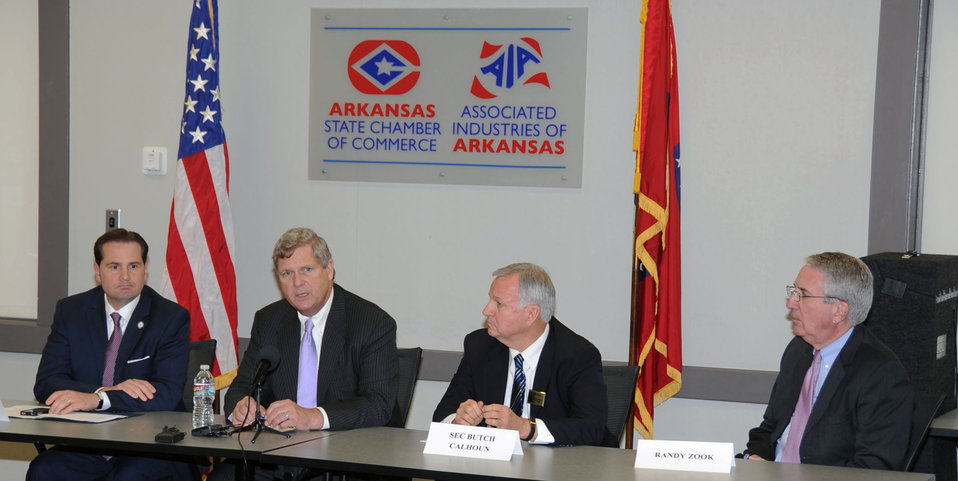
Agriculture Secretary Tom Vilsack speaking at a press conference following an agriculture producers roundtable held at the Arkansas State Chamber of Commerce. Left to right; Chris Masingill, Federal Co-Chairman of the Delta Regional Authority, Agriculture Secretary Tom Vilsack, Arkansas Secretary of Agriculture Butch Calhoun and Randy Zook, President and Chief Executive Officer of the Arkansas State Chamber of Commerce in Little Rock, AR, on Wednesday, Oct. 30, 2013.